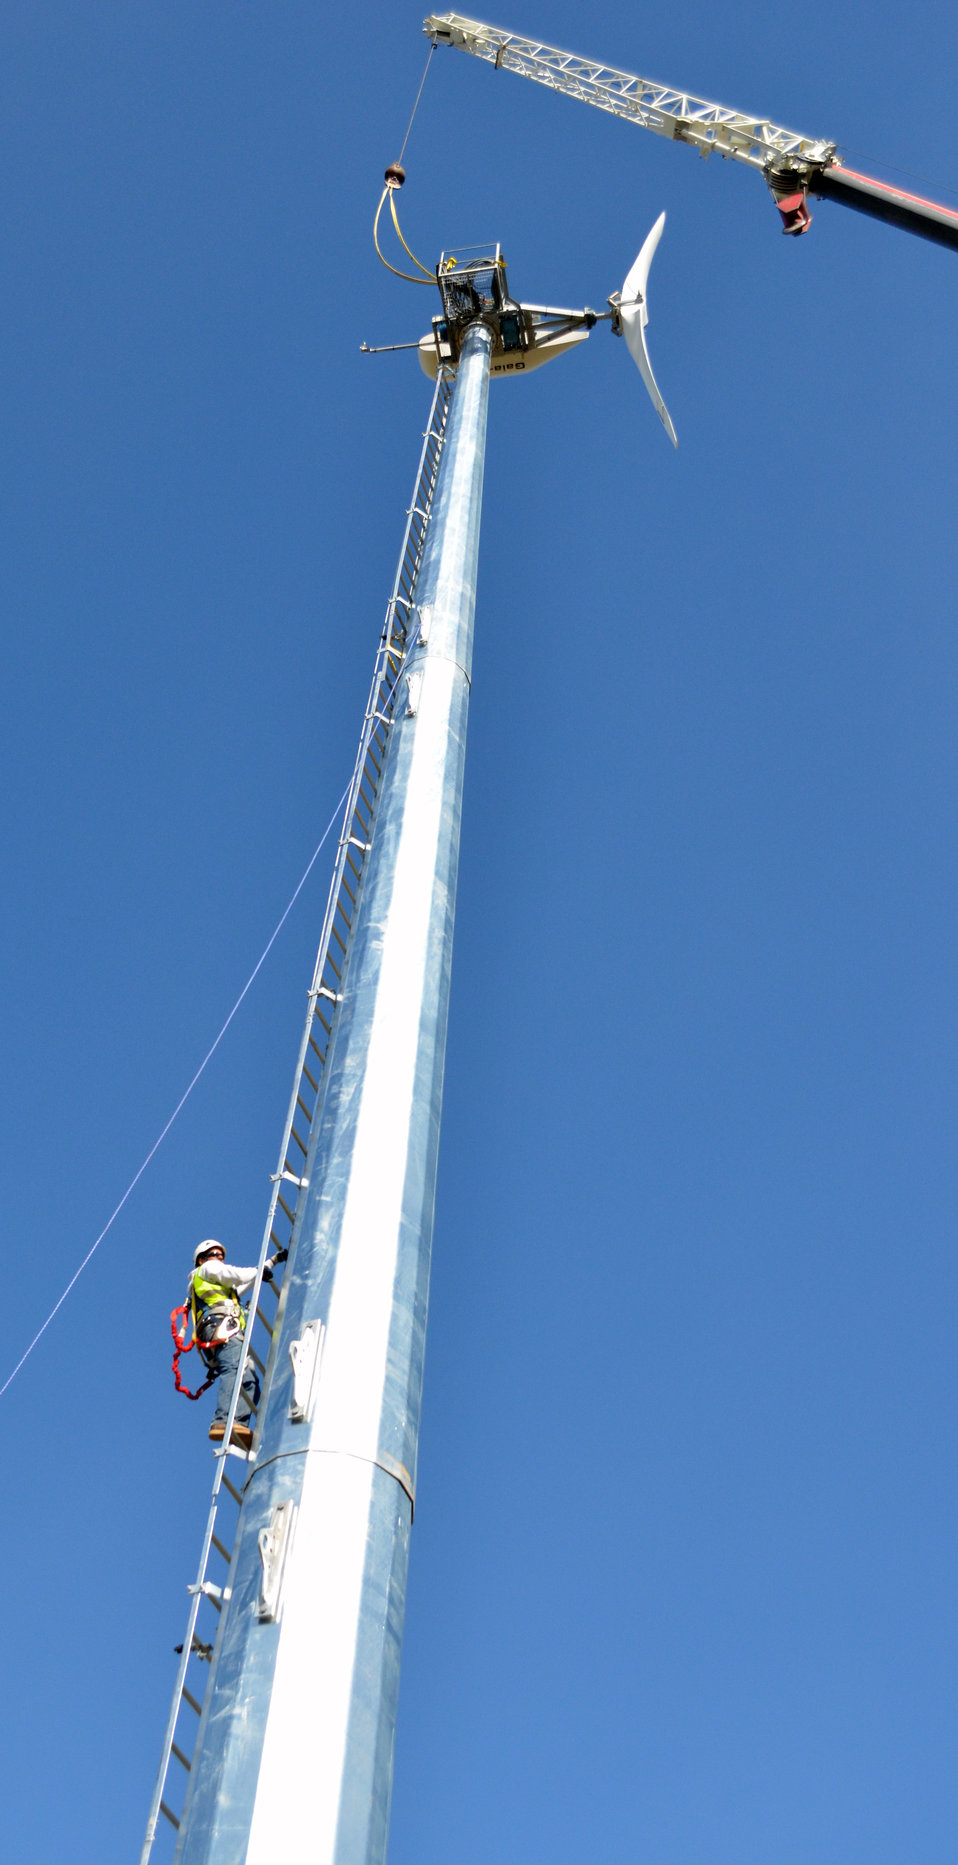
Pylon climber

A contractor in a safety harness climbs the 120-foot tower of Black Butte Lake’s wind turbine during its assembly March 13, 2013. Expected to go online within 30 days, the turbine can generate 11 kilowatts of energy and will help supply the needs of campers at the U.S. Army Corps of Engineers Sacramento District park near Orland, Calif.